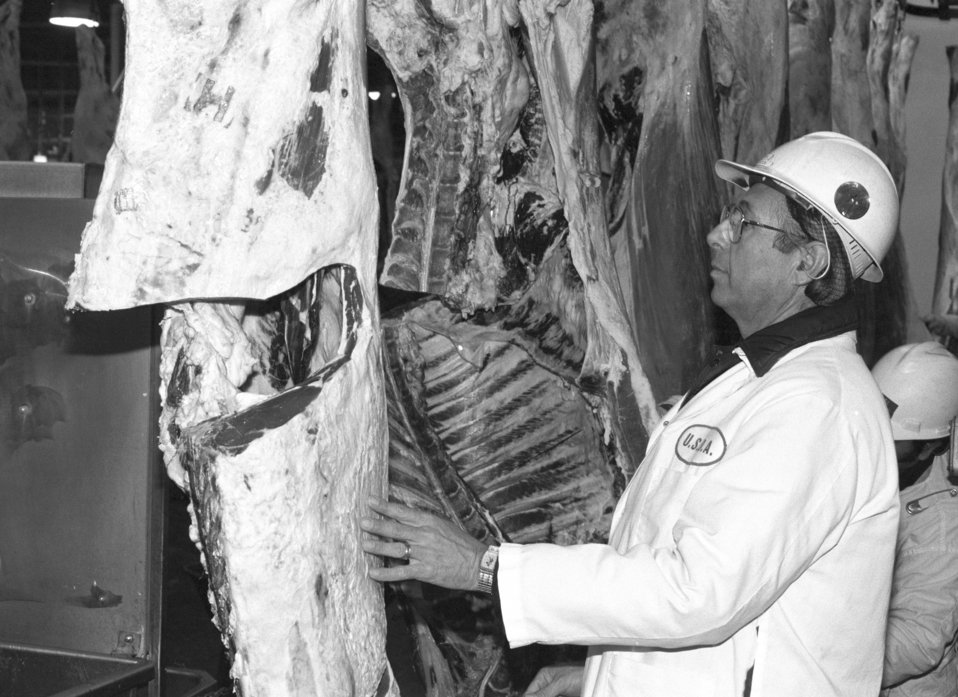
U.S. Department of Agriculture (USDA) Food Safety Inspection Service (FSIS) inspectors inspect beef using a Streamline Inspection System (SIS) at a processing plant in Plainview, TX on January 22, 1991.